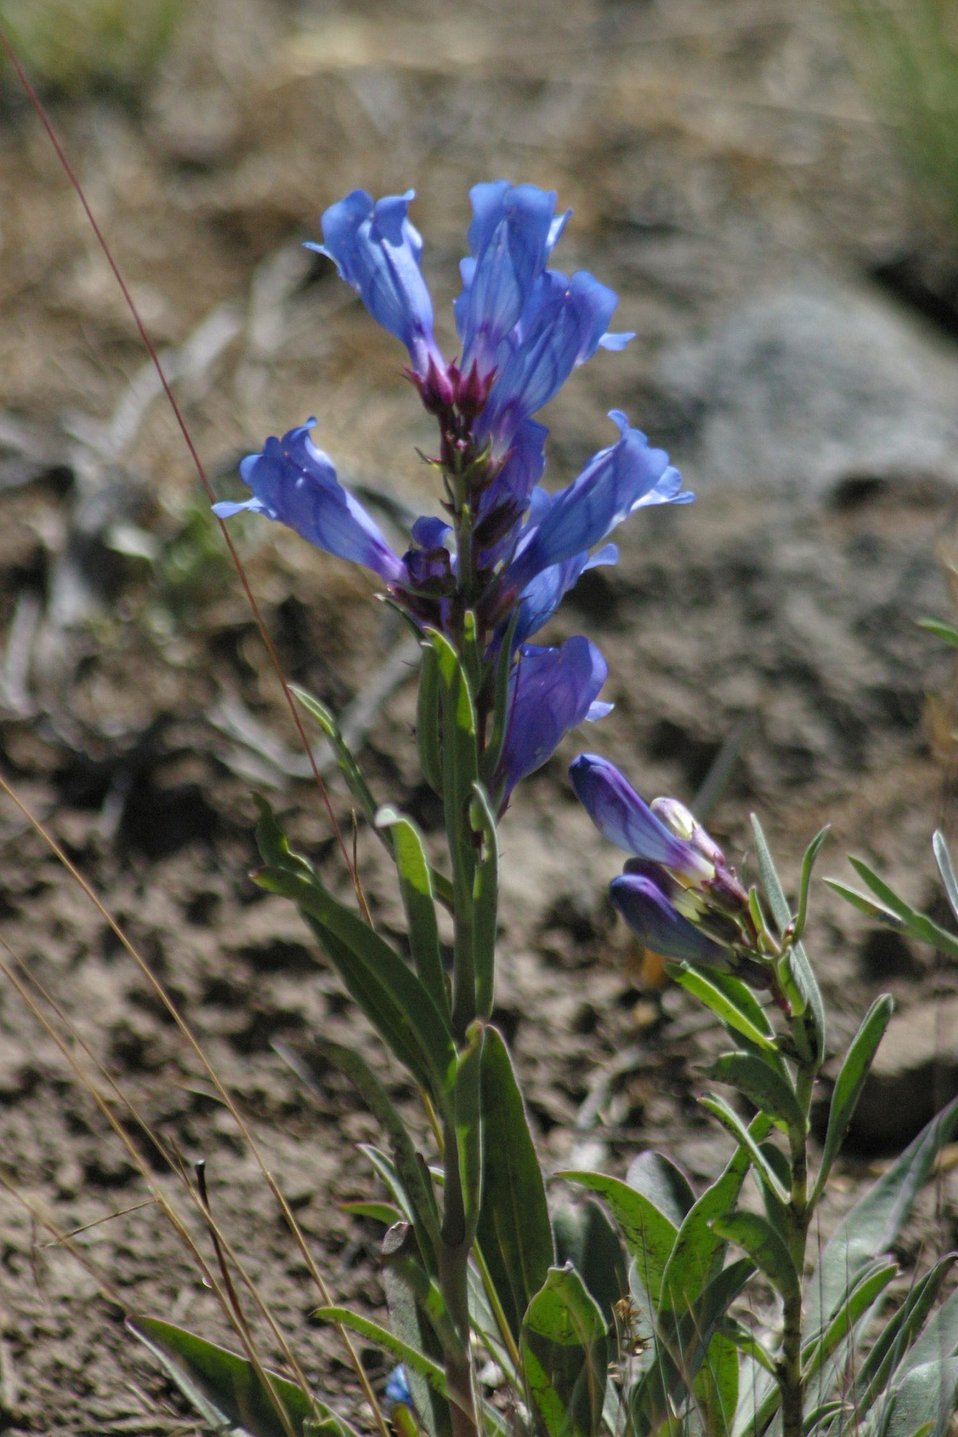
Penstemon in the Kiger Wild Horse Herd Management Area of the Burns District.